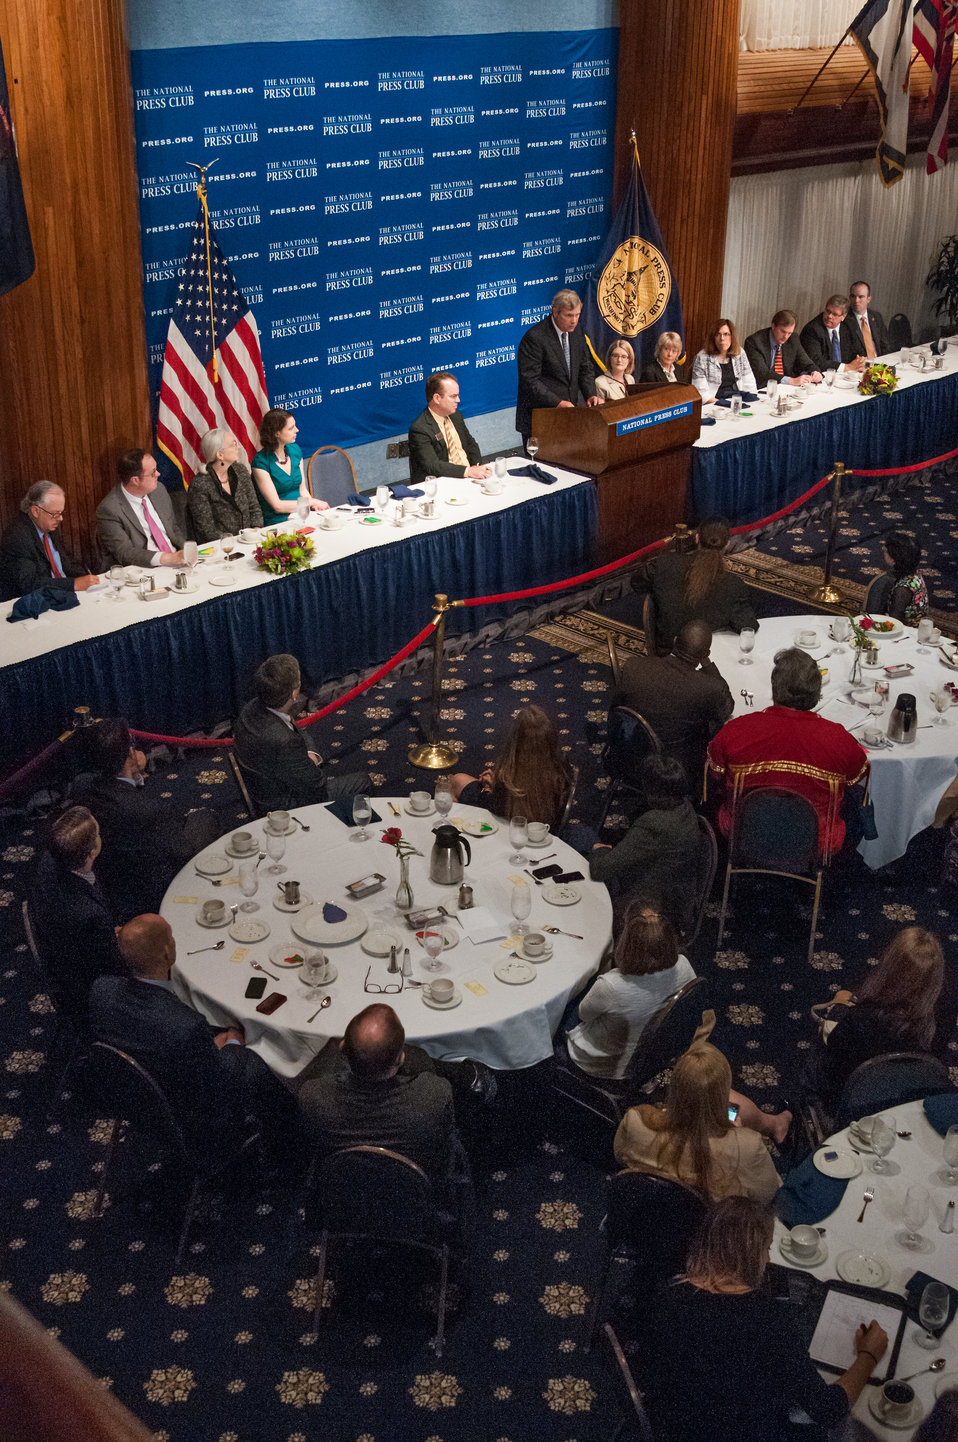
Agriculture Secretary Tom Vilsack discusses the vision for the U.S. Department of Agriculture’s (USDA) future efforts to assist America to adapt to modern environmental challenges at the National Press Club in Washington, D.C. on Wednesday Jun. 5, 2013.